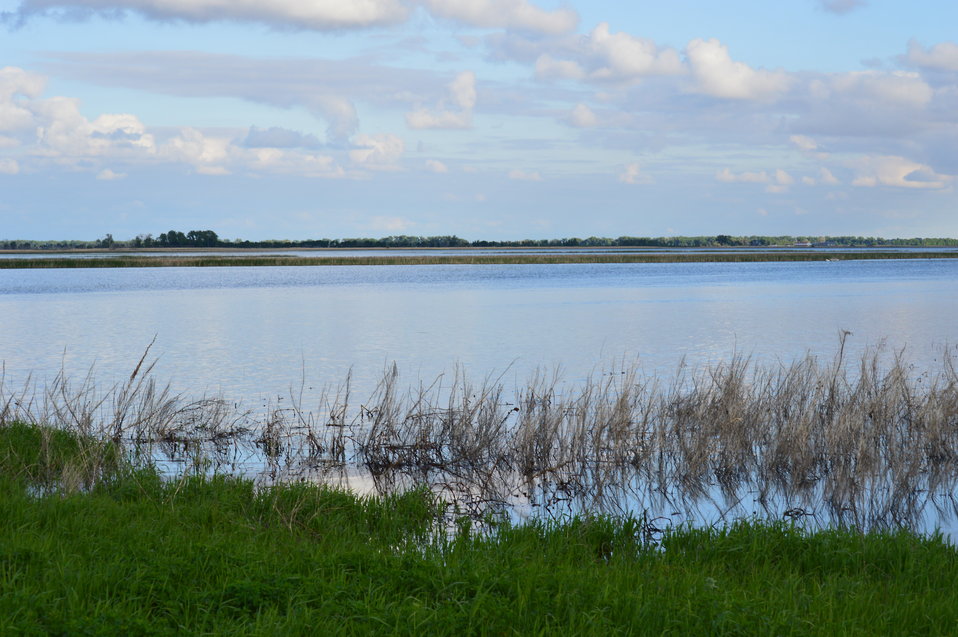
Sand Lake

Scenery and wildlife at Sand Lake National Wildlife Refuge in South Dakota